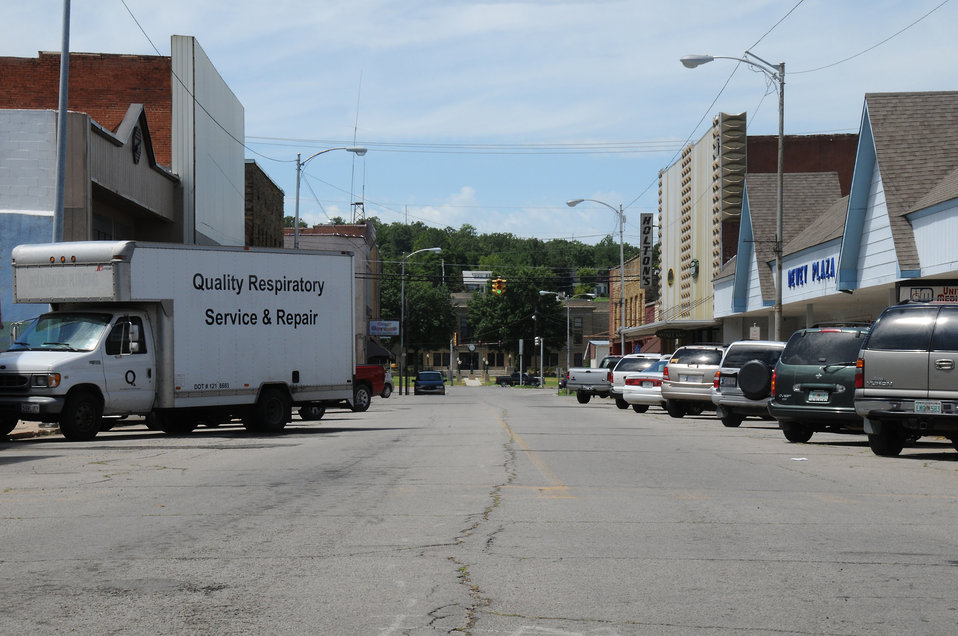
The sun shines on downtown Poteau, OK on August 11, 2009.